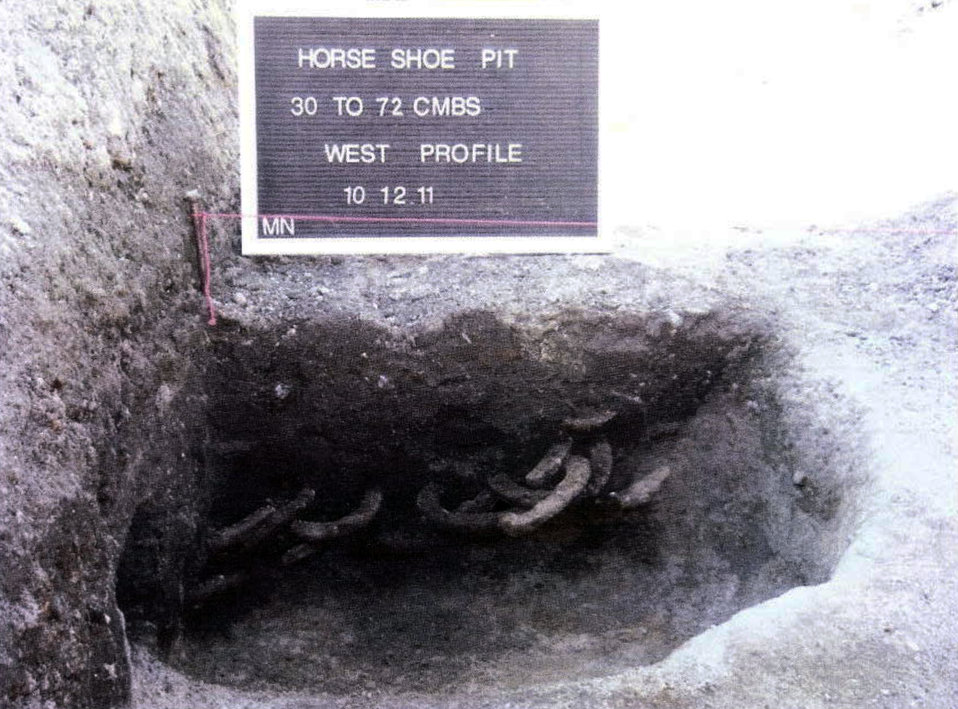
Cache of horseshoes at construction site in Presidio of Monterey

A pile of horseshoes lays partially buried at the construction site of the new general instruction building at the Presidio of Monterey in Monterey, Calif., in 2011. During construction of the building, a cache of horseshoes and related items were found, and are believed to date from between 1903 and 1912, when four or five cavalry units were stationed at the Presidio of Monterey. The U.S. Army Corps of Engineers Sacramento District oversaw construction of the building, used by the Defense Language Institute to teach military personnel foreign languages.